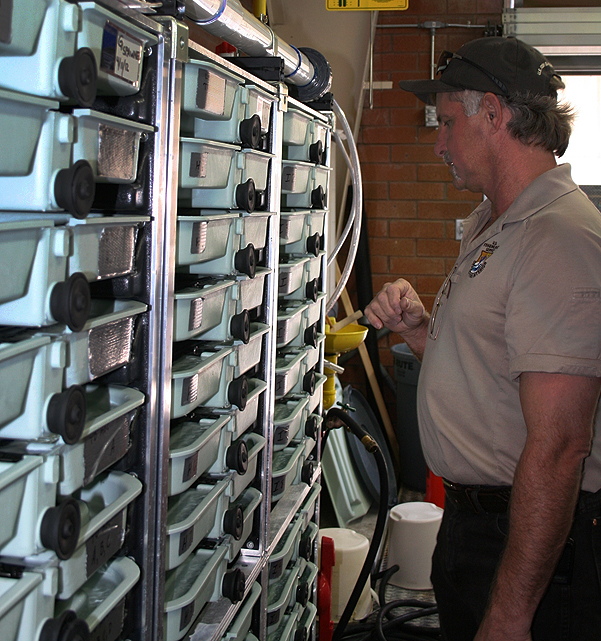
Monitoring fertilized eggs

Thomas Hogan checks the already fertilized eggs that were placed in these trays after a one hour bath in cold water and 10 minutes in an iodine solution to remove any surface bacteria.